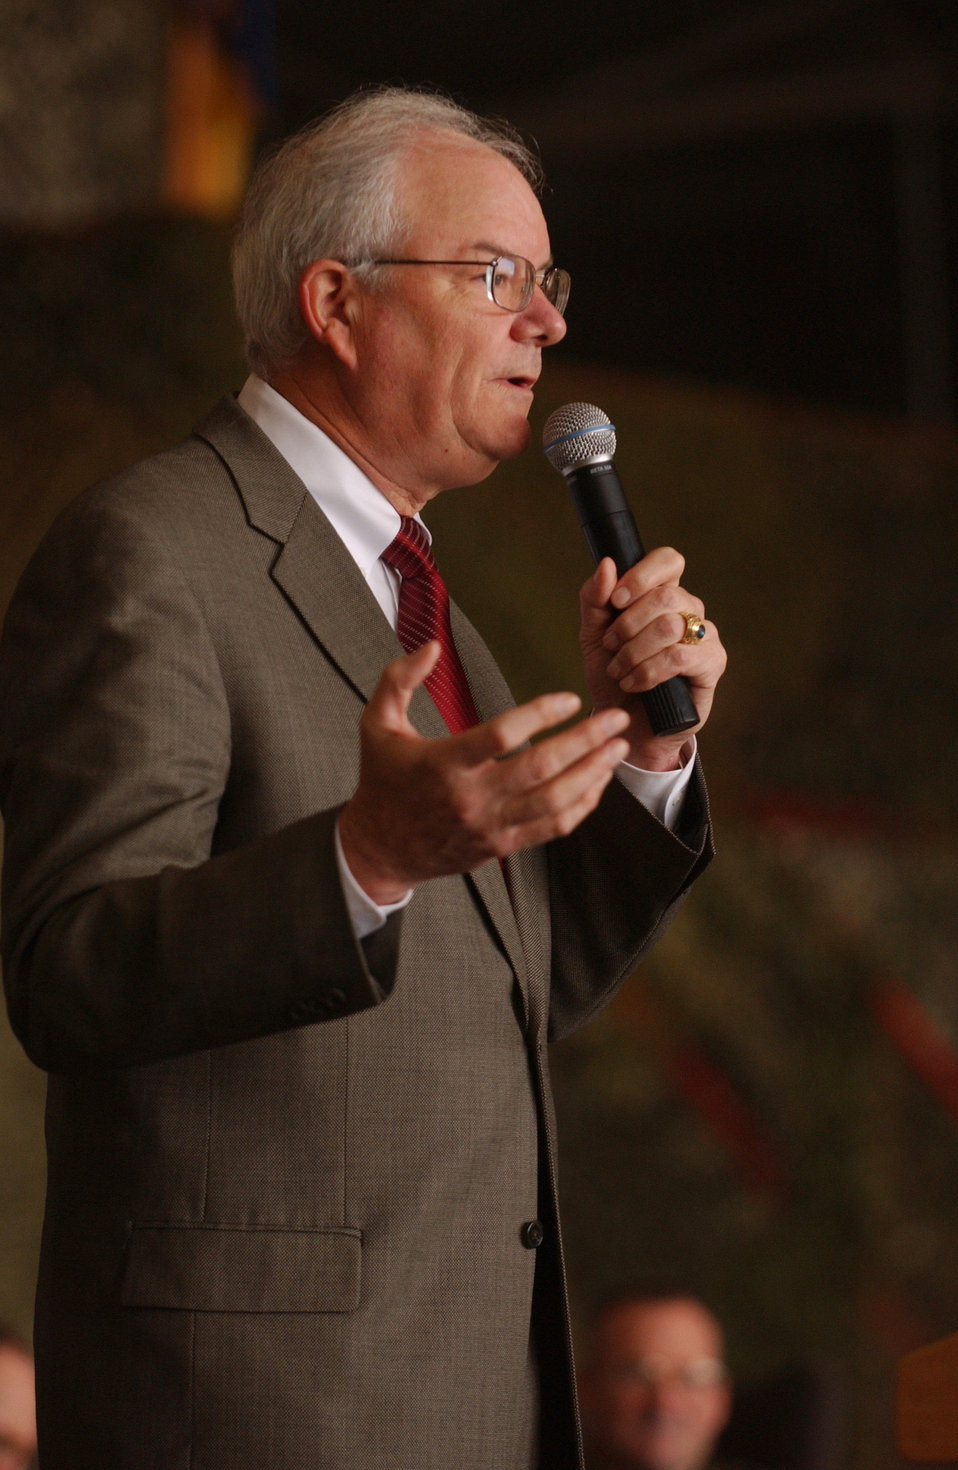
Secretary of the Air Force visits Korea

Secretary of the Air Force Michael W. Wynne speaks to Airmen Tuesday, March 21, 2006, during his visit to Osan Air Base, South Korea.